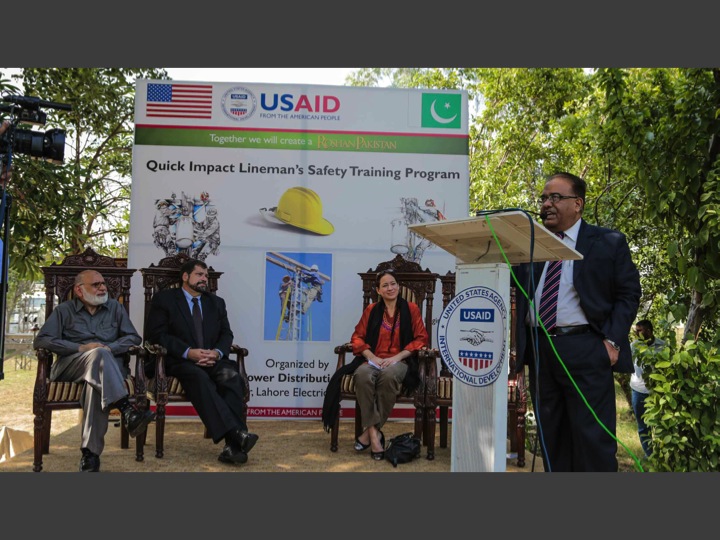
Mr. Ehsan Elahi at Certificate distribution ceremony